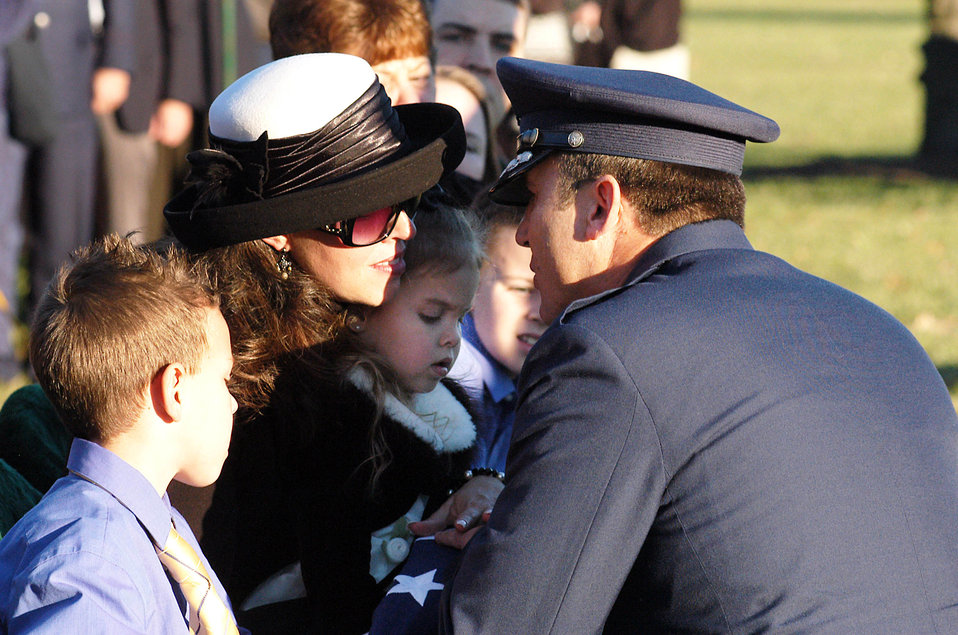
Laid to rest

Brig. Gen. Noel T. Jones gives the American flag to Ginger Gilbert, spouse of Maj. Troy Gilbert, Dec. 11 at Arlington National Cemetery. Major Gilbert was laid to rest here with a full honors funeral and received two medals posthumously, the Distinguished Flying Cross with Valor and the Purple Heart. Major Gilbert was the pilot of an Air Force F-16 Fighting Falcon engaged in support of coalition ground combat operations that crashed approximately 20 miles northwest of Baghdad Nov. 27. Gilbert was assigned to the 309th Fighter Squadron, Luke Air Force Base, Ariz., and was deployed to the 332nd Expeditionary Wing, Balad Air Base, Iraq. General Jones is the the 56th Fighter Wing commander.